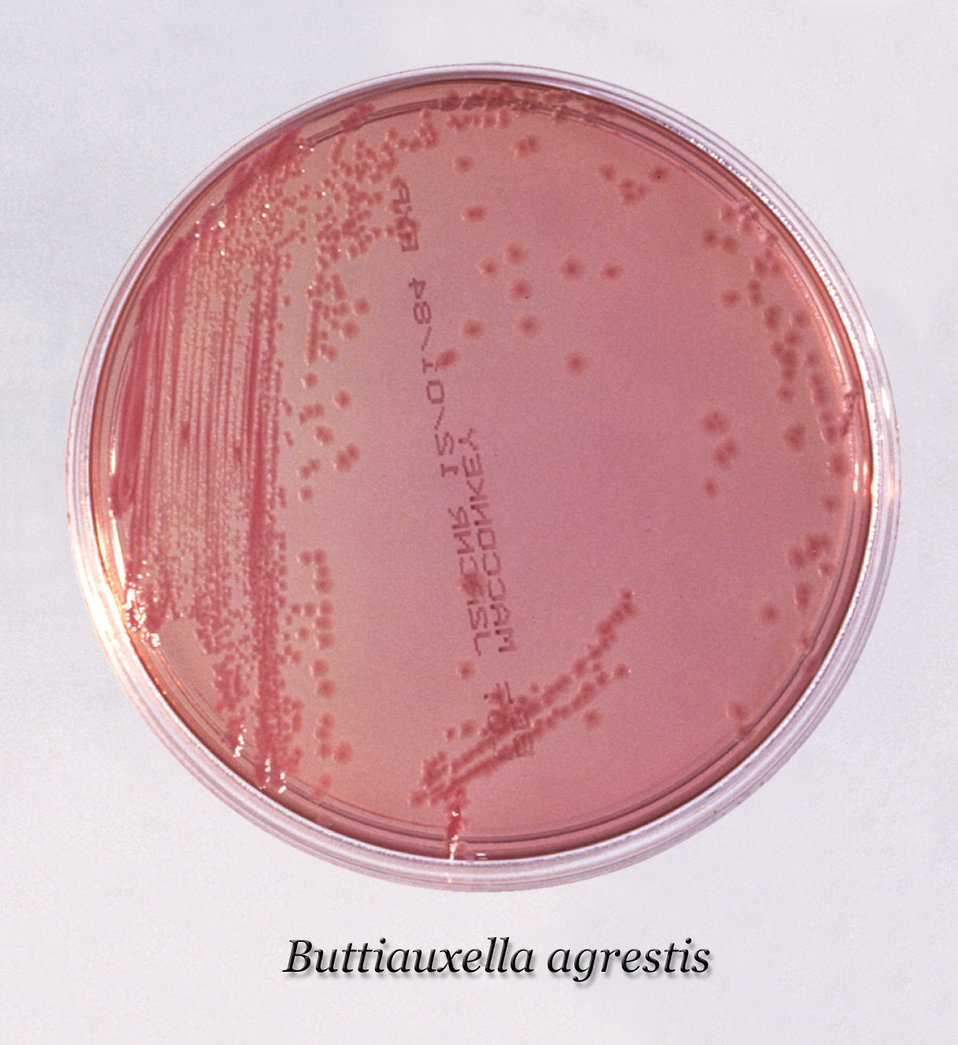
After 24 hours, this inoculated MacConkey agar culture plate cultivated colonial growth of Buttiauxella agrestis bacteria.